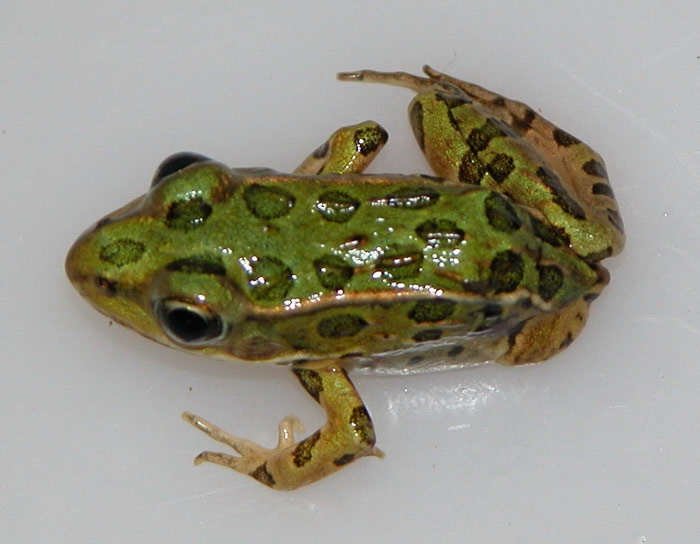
Northern leopard frog with missing limb.